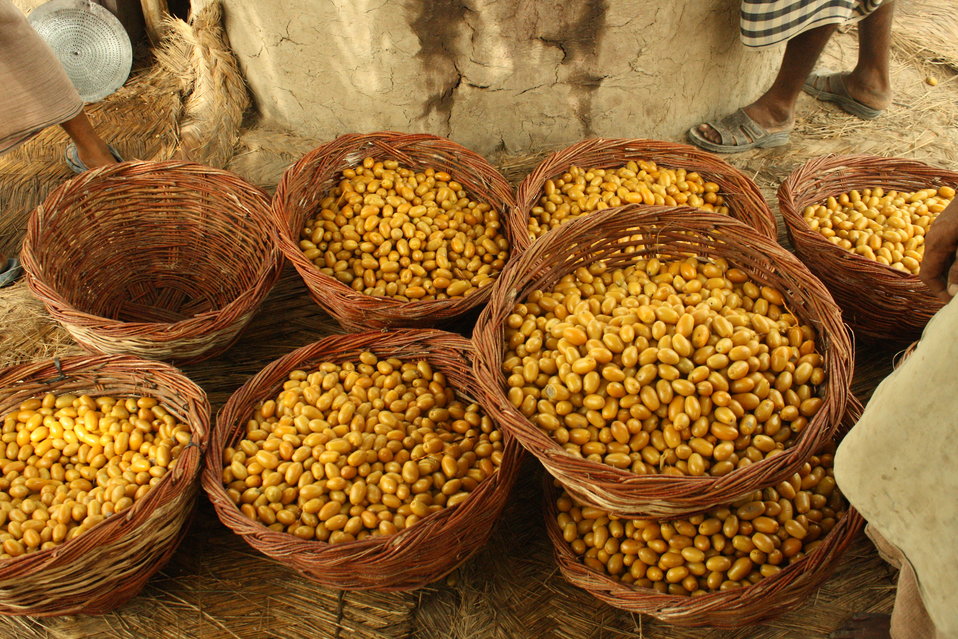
Date farming and processing is a developing industry in the country and Pakistan is the 5th largest producer of dates in the world.